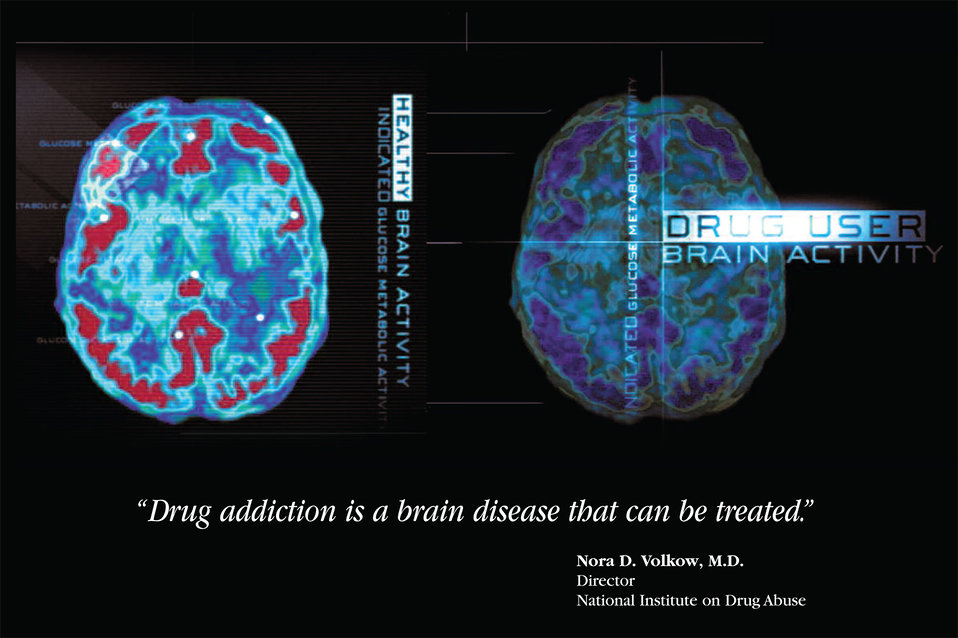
Brain activity scans